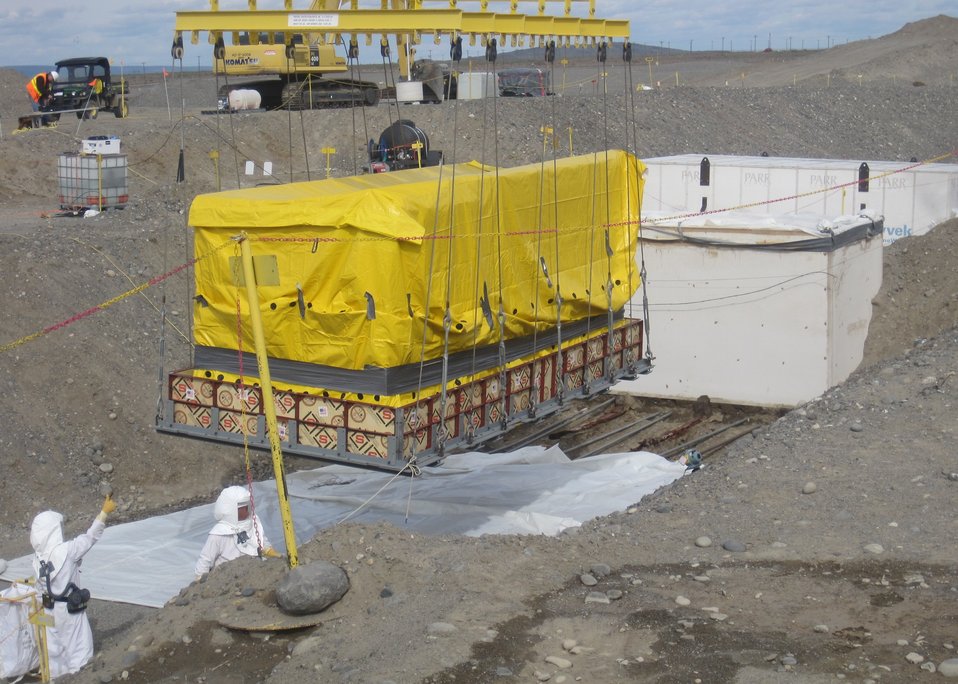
Recovery Act Funds Accelerate Cleanup, Reduce Footprint at Hanford Site

Workers lift a large box of transuranic waste covered in protective plastic and a shoring base from an underground storage trench.